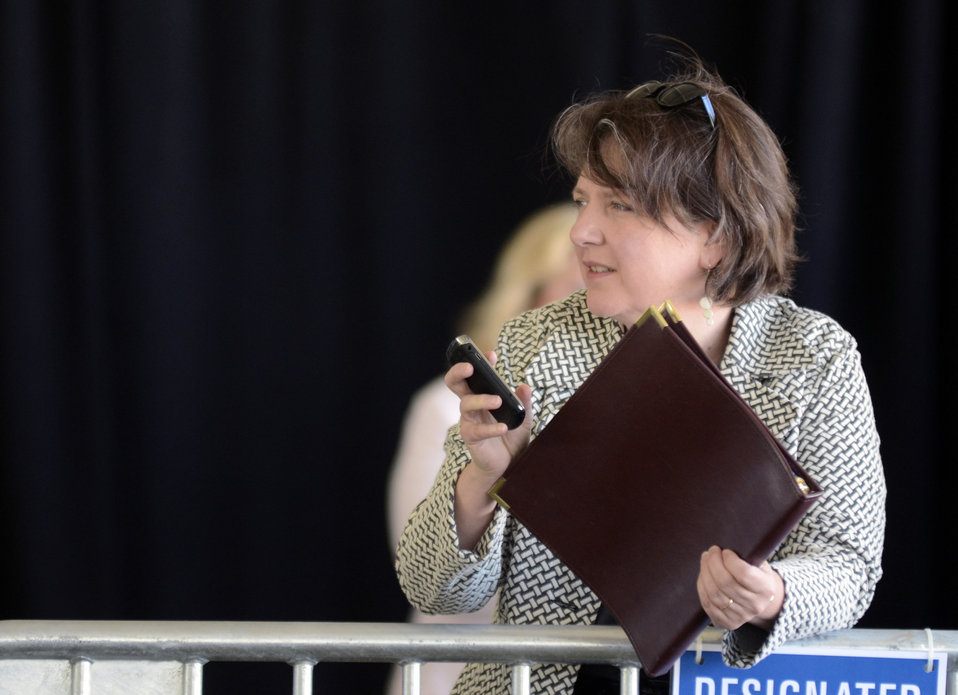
Agriculture Deputy Secretary Kathleen Merrigan prepares to speak at the opening ceremony for the 2012 Smithsonian Folklife Festival in Washington, D.C. on Wednesday, June 27, 2012. This year’s festival features three themes; “Creativity and Crisis” celebrates the 25th anniversary of the AIDS Memorial Quilt, “Citified,” explores the rich culture and community of neighborhoods east of the Anacostia, and the third “Campus and Community” celebrates 150 years of USDA and the Land-Grant university system.